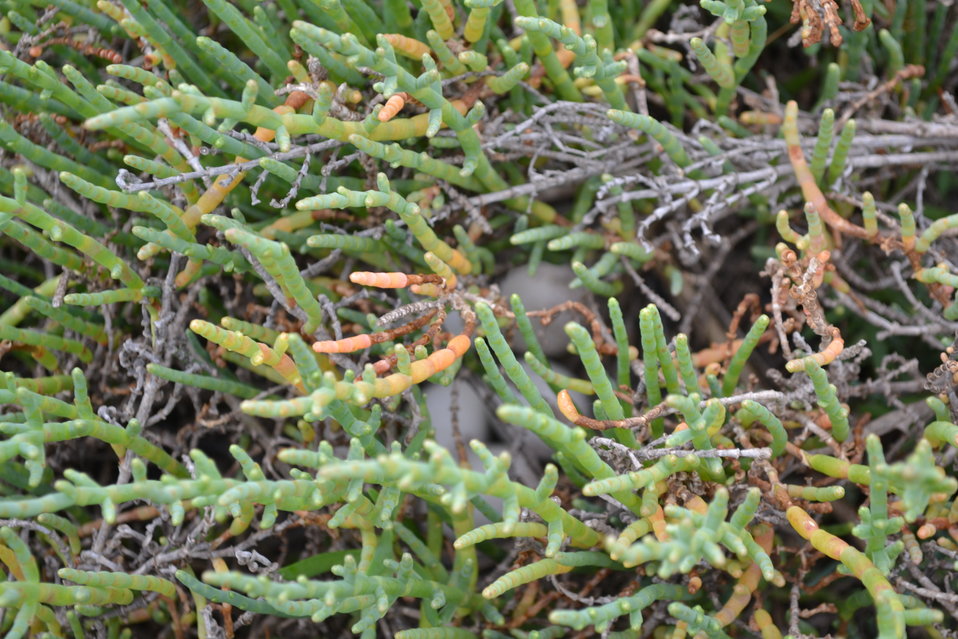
Can you see the Clapper Rail eggs in the pickelweed?

Endangered Light-footed clapper rails hide their nests in intricately woven nests within the marsh; using cordgrass and pickleweed as the main plants to seclude their nests